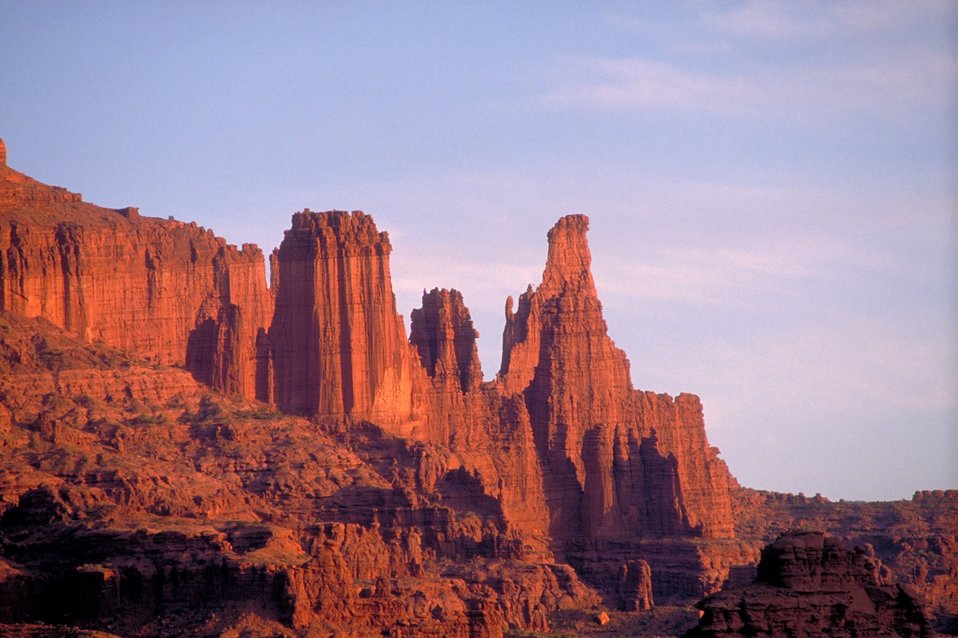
Fisher Towers along Highway 128, near Moab, Utah.